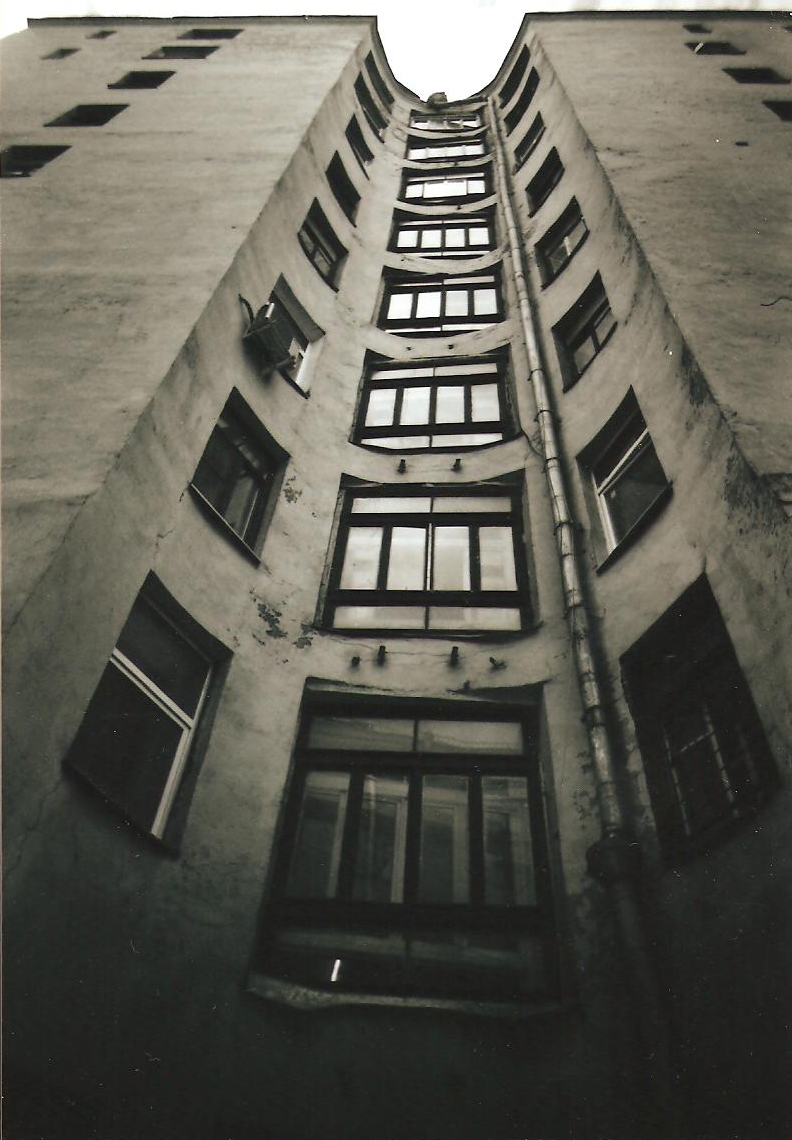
Русский: Москва, Большой Гнездниковский переулок, дом 10. Вид со двора.